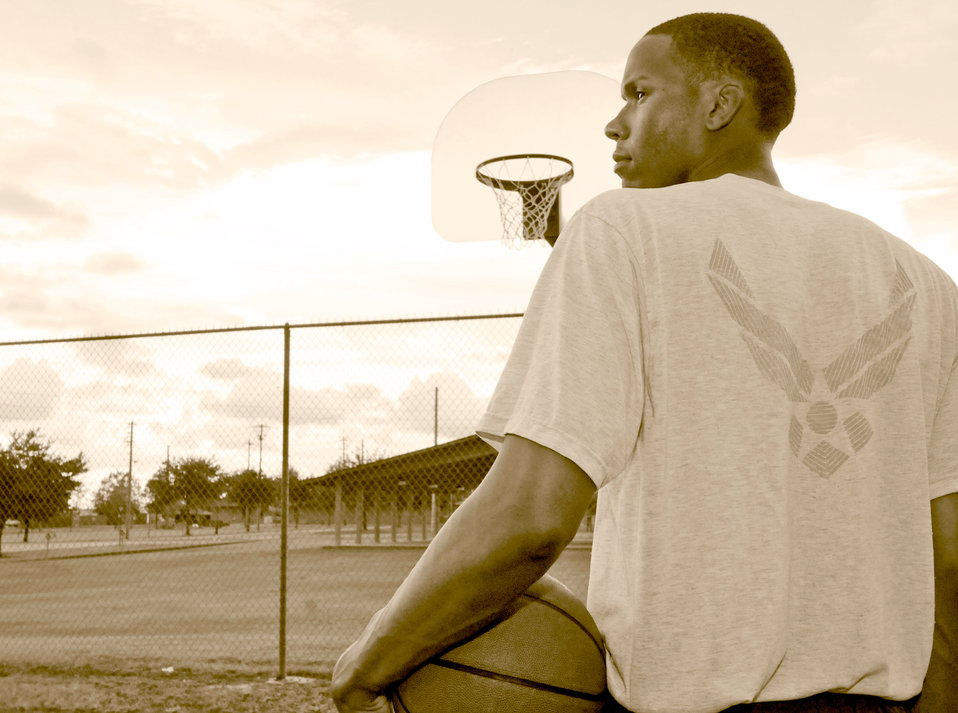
Antoine Hood

Capt. Antoine Hood had a celebrated college basketball career at the Air Force Academy from 2002 through 2006, but has yet to realize his dream of playing in the NBA. With his active-duty commitment now complete, the reservist said he's ready to take the next step and make that dream a reality. Captain Hood is assigned 919th Special Operations Wing.